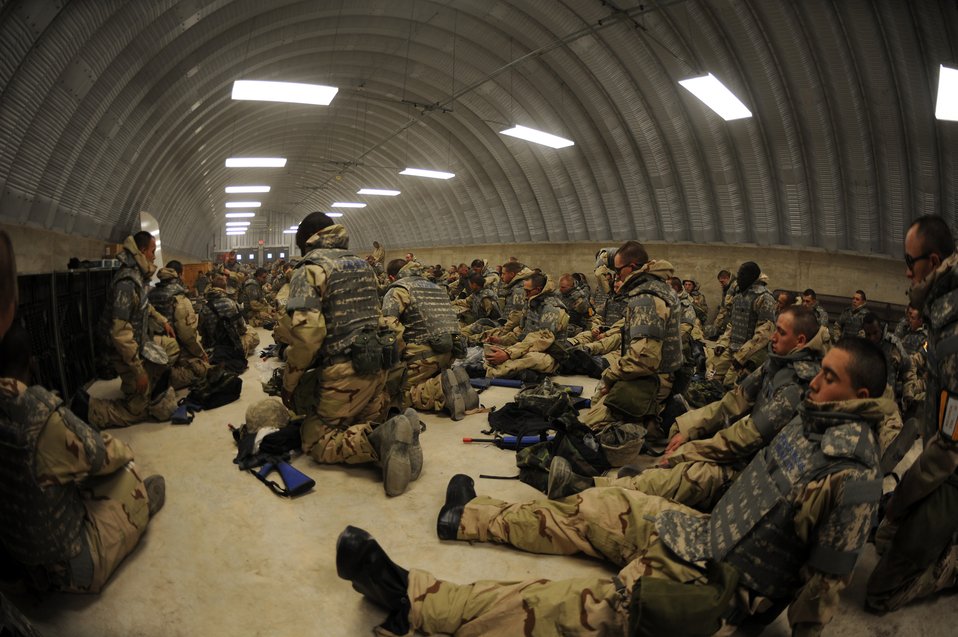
Trainees slew the BEAST in new basic training program

Airmen Basic trainees take a break inside a hard shelter after inspecting each others body armor during the five-day deployment exercise called the Basic Expeditionary Airman Skills and Training, or BEAST, which kicked off Dec. 15 at Lackland Air Force Base, Texas. The BEAST is the newly built complex added into the extended, 8.5-week Basic Military Training curriculum that began Nov. 5.